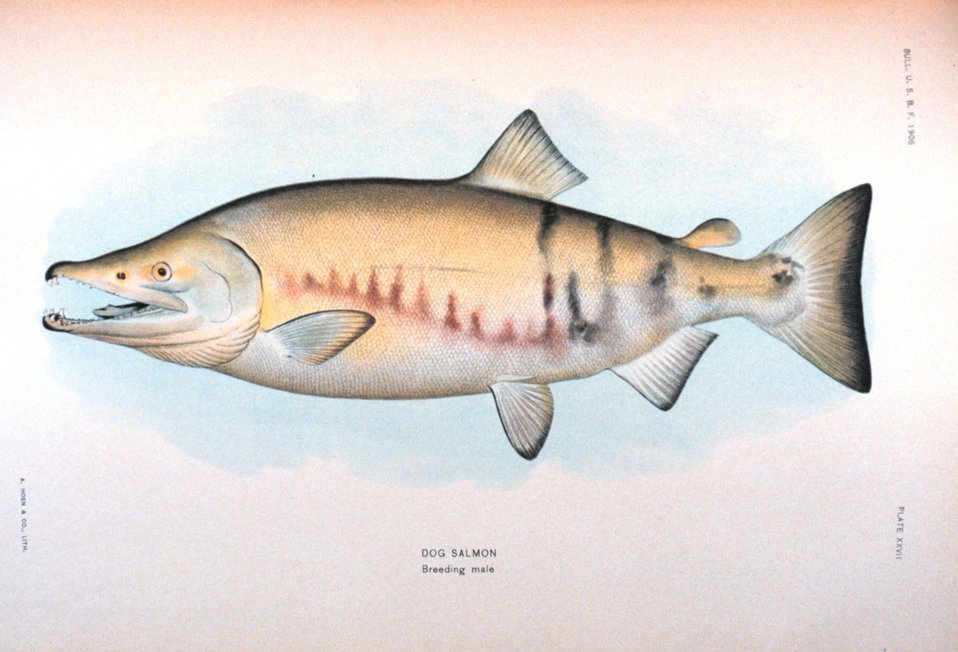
Dog salmon, breeding male. In: 'The Fishes of Alaska.' Bulletin of the Bureau of Fisheries, Vol. XXVI, 1906. P. 360, Plate XXVII.